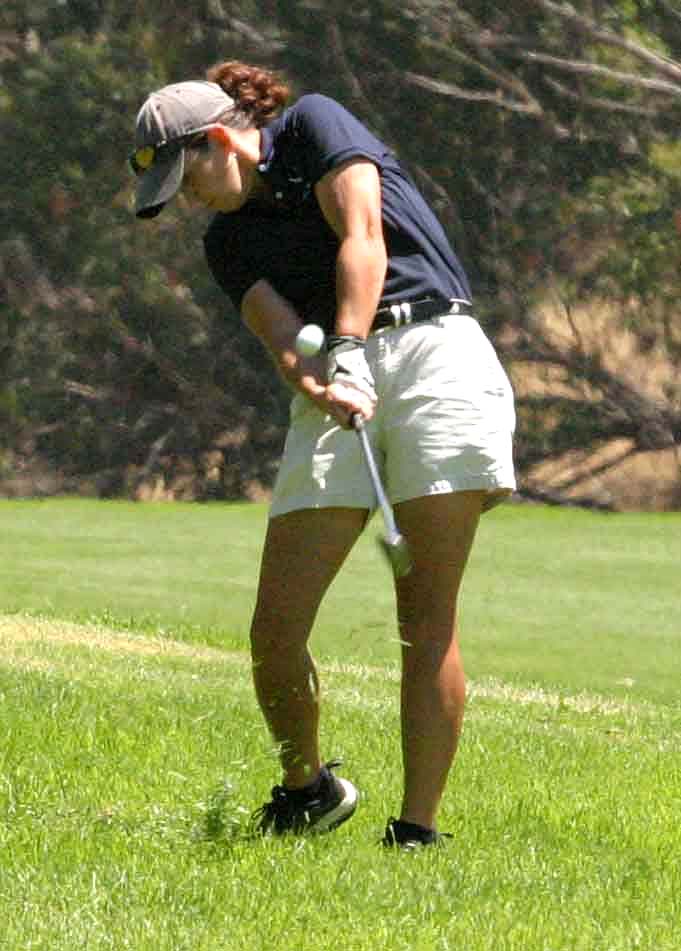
2006 Female Athlete of the Year

Capt. Linda Jeffery is the Air Force 2006 Female Athlete of the Year. When not golfing, Captain Jeffery is a combat support flight chief at Little Rock Air Force Base, Ark.